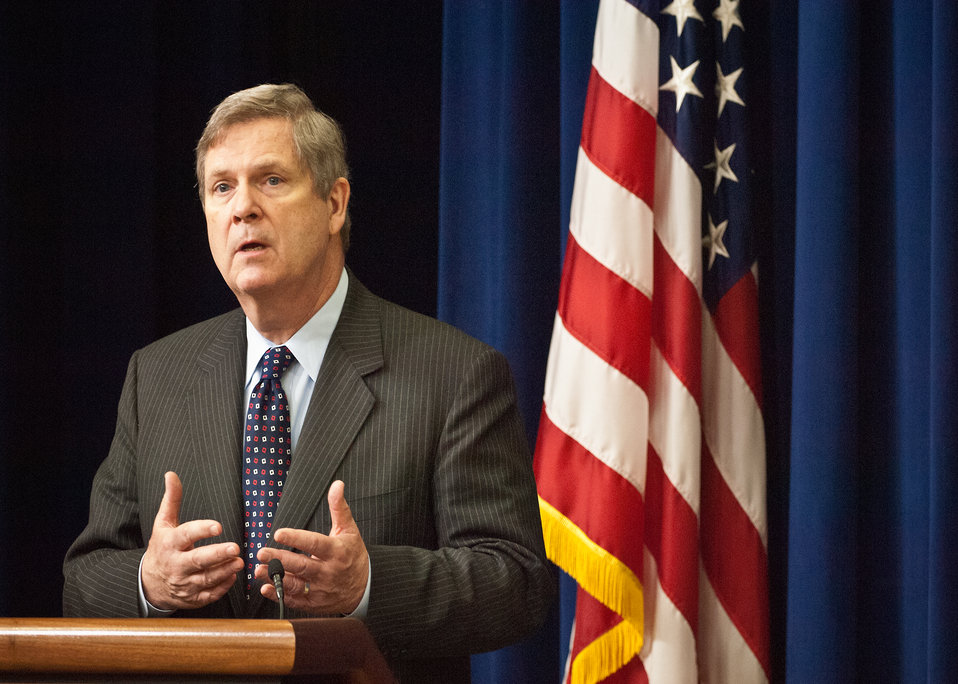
Agriculture Secretary Tom Vilsack spoke to the 11th Annual Meeting of State Agriculture and Rural Leaders about the success and future of agriculture and rural development at the Eisenhower Executive Office Building in Washington, D.C., on Friday, January 6, 2012.